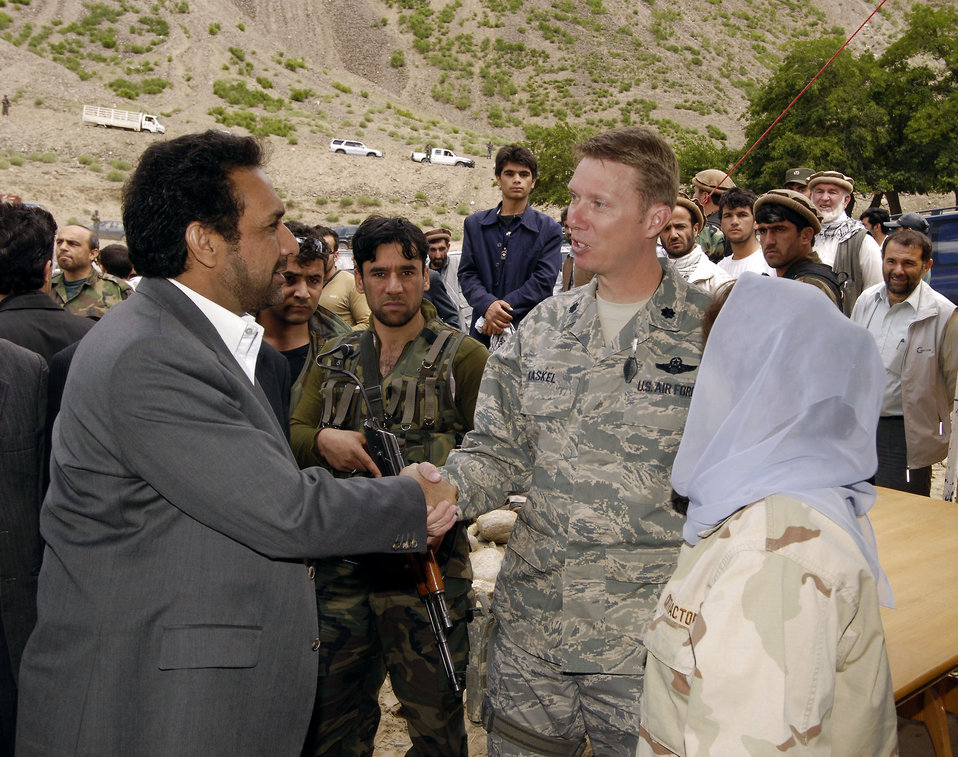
New road brings prosperity to Afghan province

Afghan Vice President Ahmad Zia Massoud shakes hands with Lt. Col. Russell Kaskel at a groundbreaking ceremony for the new $6 million Barak to Khenj road May 28 in Barak of the Bazarak District of the Panjshir province in Afghanistan. The 18-kilometer, two-lane road is scheduled to be completed in March 2009. Colonel Kaskel is the Panjshir Provincial Reconstruction Team commander.